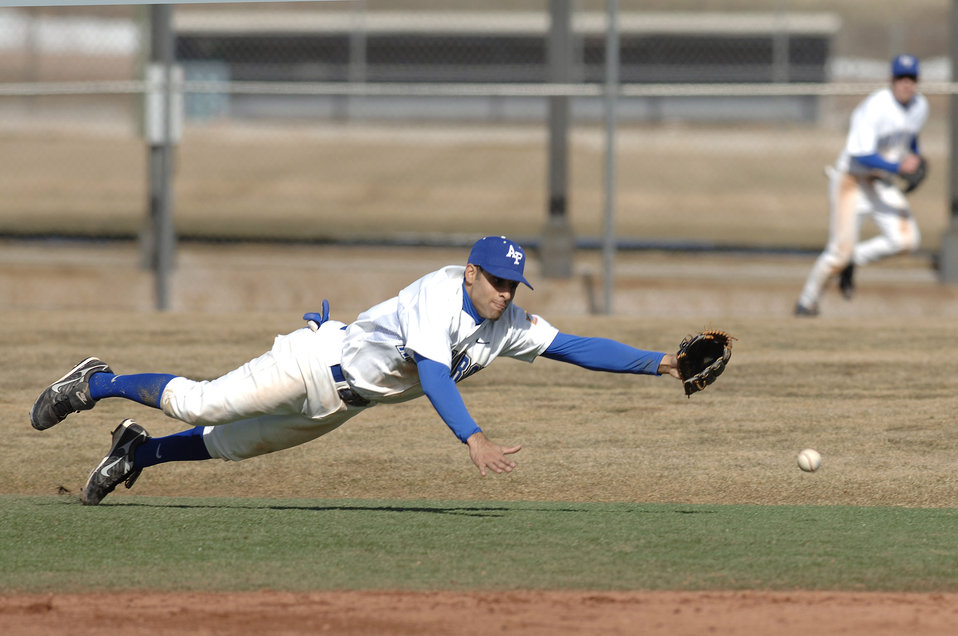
Falcons fall to Northern Colorado

Freshman cadet K.J. Randhawa dives for a hard ground ball during play against the Northern Colorado Bears Feb 10. He is the shortstop for the AF Academy Men Falcons baseball team. The Bears swept the three game weekend series from the Falcons.